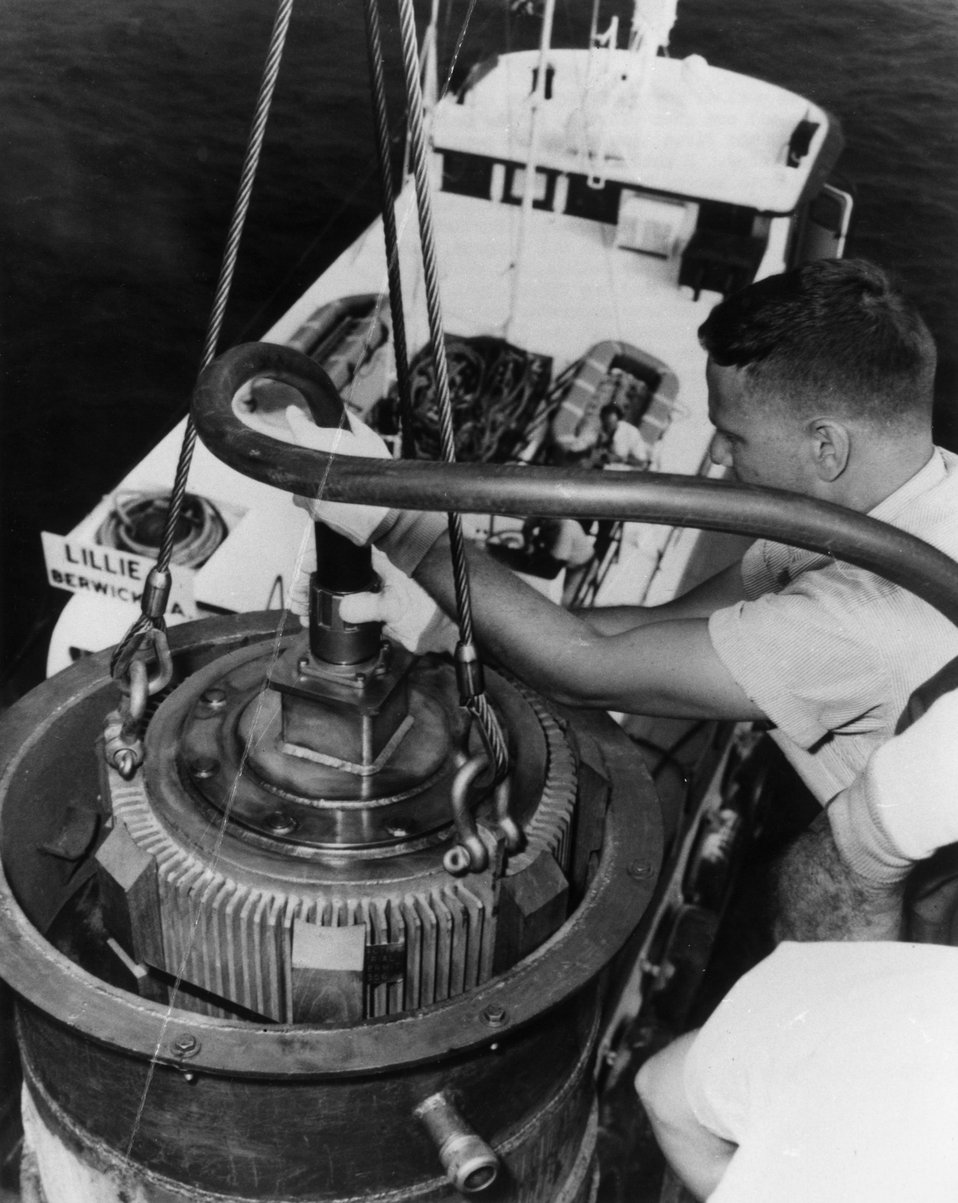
Switch to nuclear power -- Navigation aids on an offshore oil and gas platform in the Gulf of Mexico for the first time are being powered by nuclear energy. c. 1965